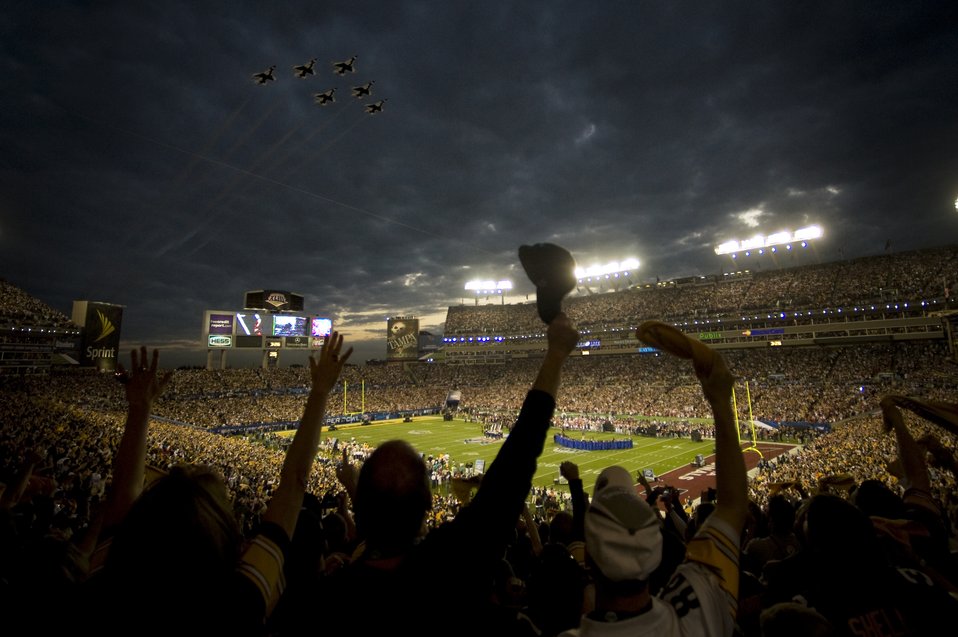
Thunderbirds perform Super Bowl flyover

The U.S. Air Force Thunderbirds fly over Superbowl XLIII prior to kickoff in Tampa, Fla., Feb. 1.